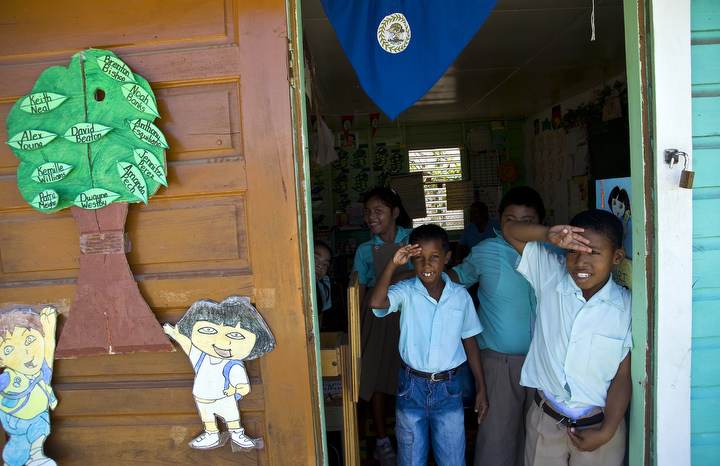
Operation Southern Partner paints a brighter future in Belize

Children enrolled into the Stella Maris School for the Physically Disabled watch as Airmen from Operation Southern Partner paint the exterior of their school June 8, Belize City, Belize. Operation Southern Partner is an engagement between partner nations building stronger relationships while conducting subject matter expert exchanges on 79 topics between seven Caribbean nations.